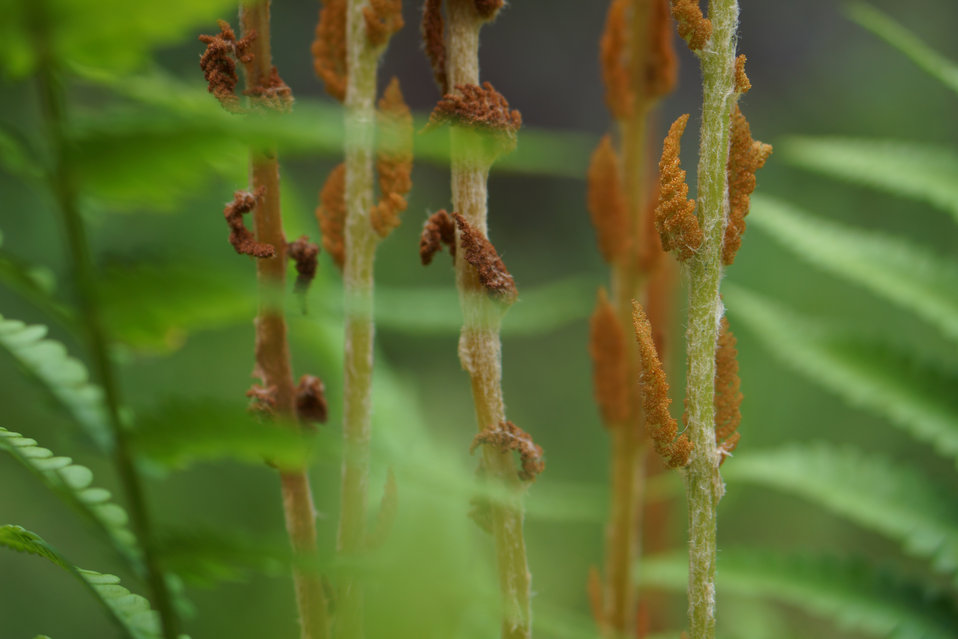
Fern fronds

In May, bog conservationists from Tennessee, North Carolina, and Georgia convened in the north Georgia mountains for the spring, 2014 meeting of the Bog Learning Network. The event provided an opportunity for biologists to see, first hand, the result of management efforts at two north Georgia bogs. More importantly, the outings provided an opportunity to share innovative approaches to bog management, such as the role of the Georgia Plant Conservation Alliance in conserving rare plants and coordinating a cadre of volunteers to work on bog management.

The Bog Learning Network was convened in the winter of 2013 as a way to bring together people working for bog conservation across the Southern Appalachians. Southern Appalachian bogs are one of North America’s rarest habitats and home to many rare plants and animals.